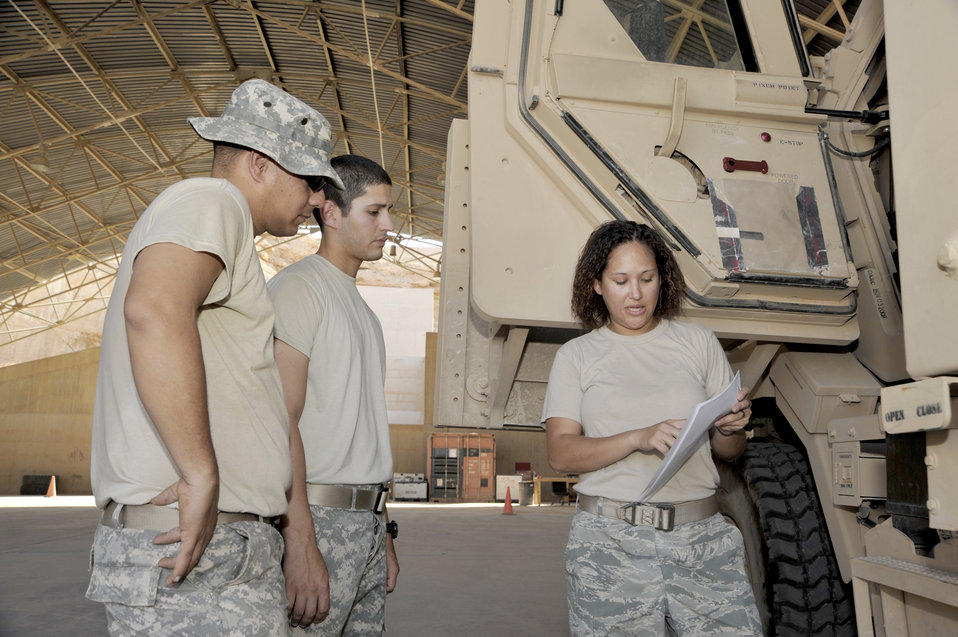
521st AMOG keeps Glaxies Flying through Iraq

Staff Sgt. Laurel Gallagher, Redistribution Property Assistance Team rolling stock NCO in-charge, explains the process of inspecting equipment Sept. 12, 2010 at Al Asad Air Base, Iraq, when units drop it off before redeploying. The RPAT must inspect the equipment to ensure the equipment is clean, has all of its accessories and parts and the serial numbers match on the paperwork.